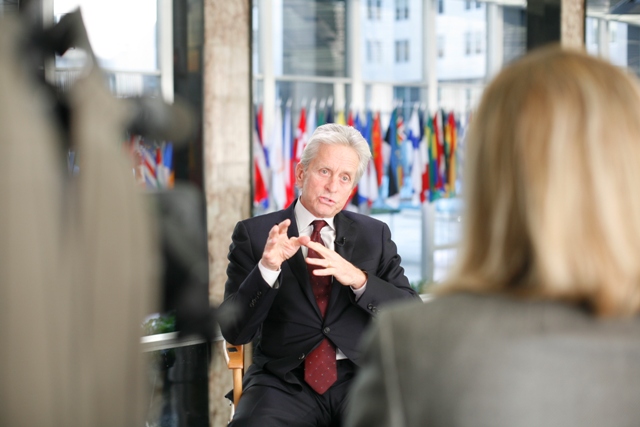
Deputy Assistant Secretary Esser Speaks With Actor Michael Douglas

Deputy Assistant Secretary of Public Affairs Victoria Esser speaks with Actor Michael Douglas during his visit to the U.S. Department of State in Washington, D.C., on November 3, 2011.